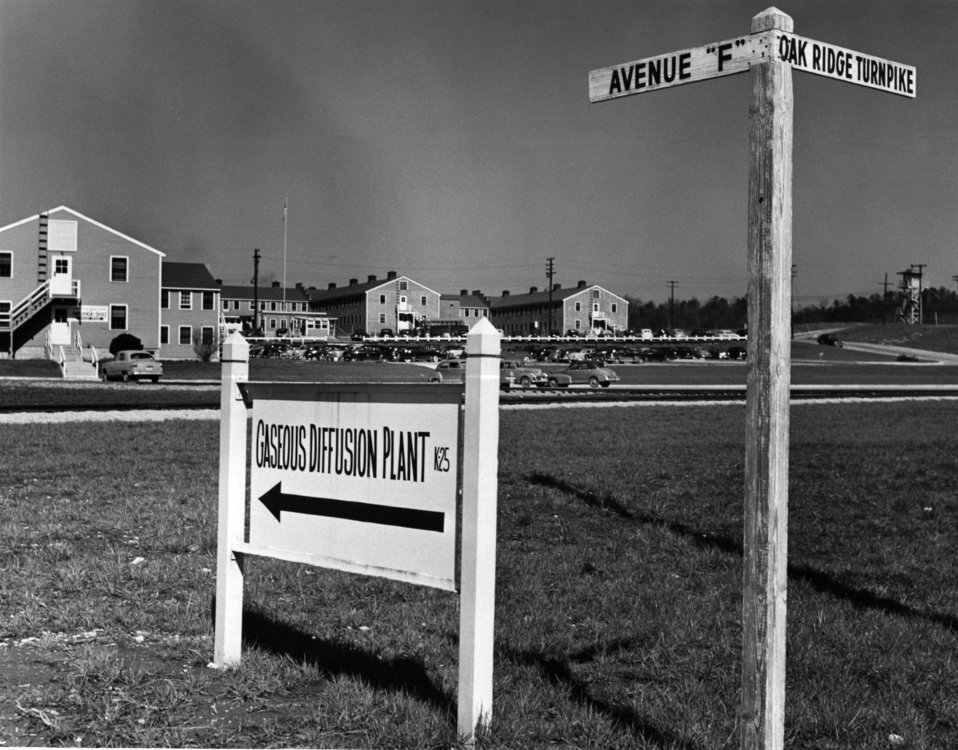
K-25 Sign Oak Ridge

5456-6 DOE photo Ed Westcott 2-17-1949 Oak Ridge Tennessee